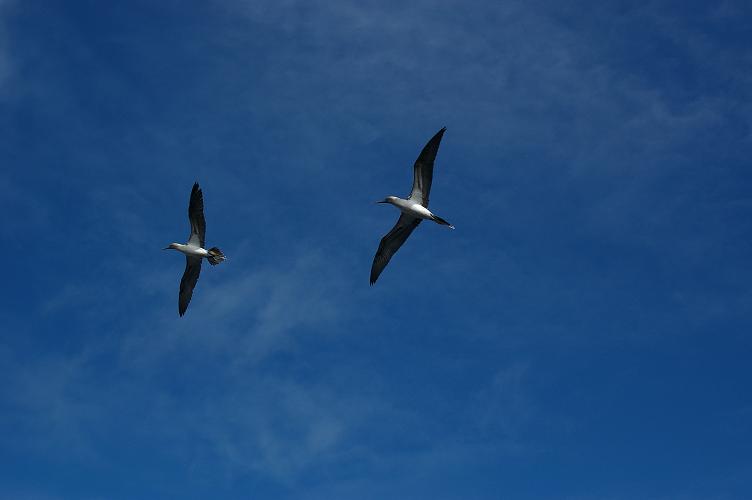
A pair of Blue-footed Boobies in flight (fishing).I, Donald Johnston, am the author of this photograph and hereby release it into the public domain